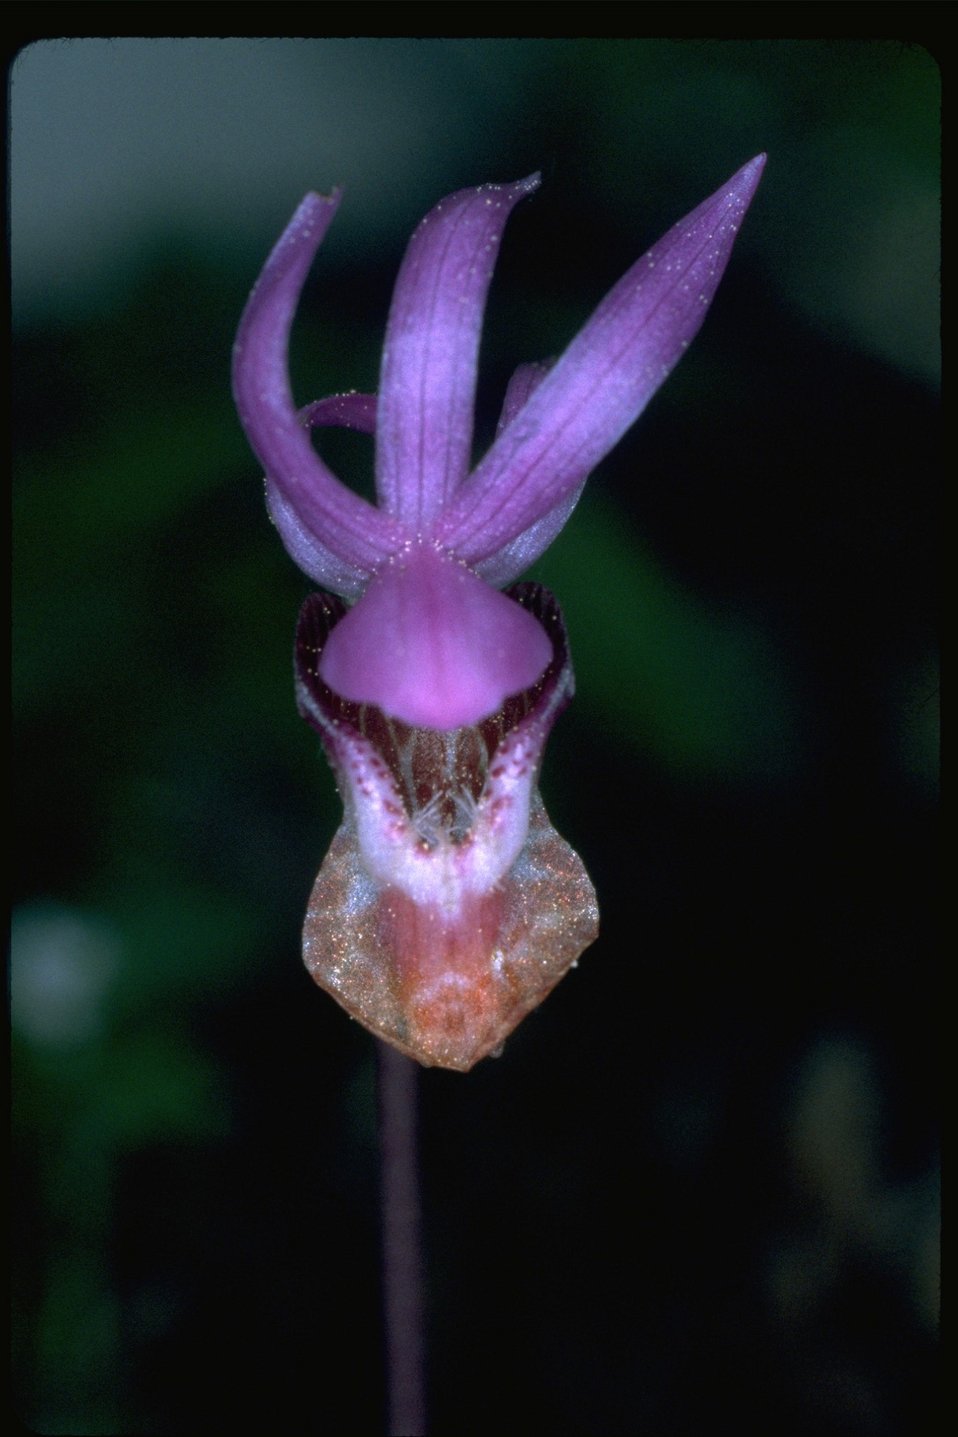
Close up shot of Lady Slipper.